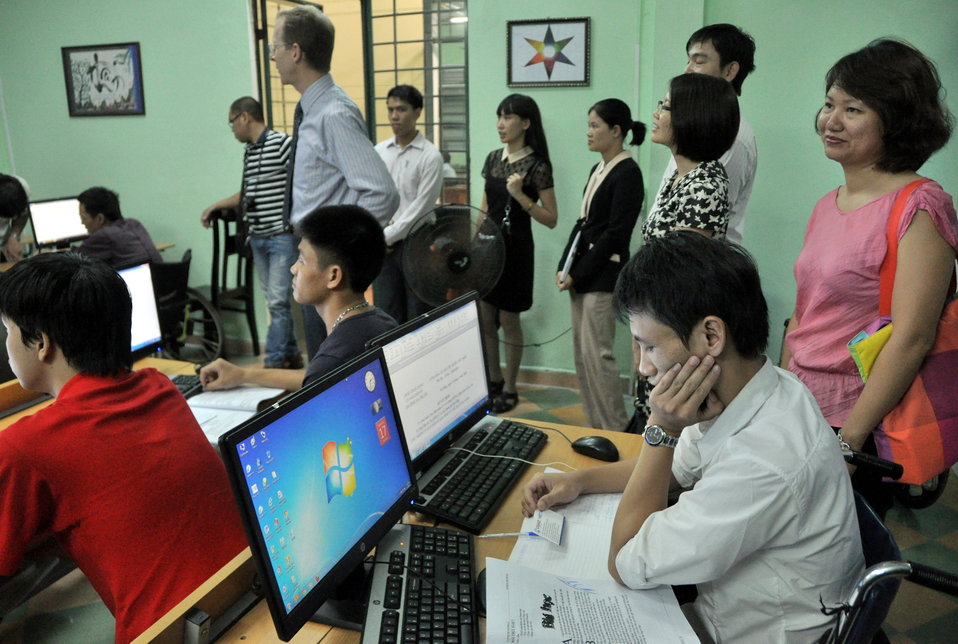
USAID Visits IT Training Program for People with Disabilities at Dong A University

Danang, Vietnam
July 17, 2013